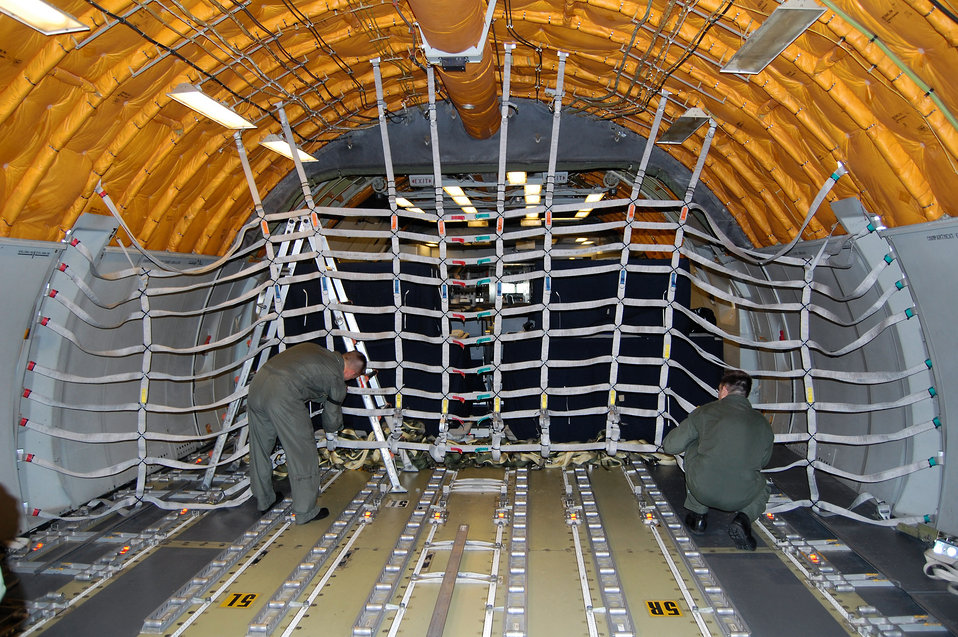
Battlelab initiative aims to speed KC-10 cargo loading

Boom operators from McGuire Air Force Base, N.J., install an alternative, lightweight cargo net inside a KC-10 Extender Sept. 16 as part of a demonstration for the Air Mobility Battlelab. The demonstration was for the battlelab's KC-10 Lightweight Cargo Net and Hoist Initiative which was recommended for use to Air Mobility Command. It was one of the last initiatives of the AMB, which deactivated Sept. 24 at the U.S. Air Force Expeditionary Center on Fort Dix, N.J.